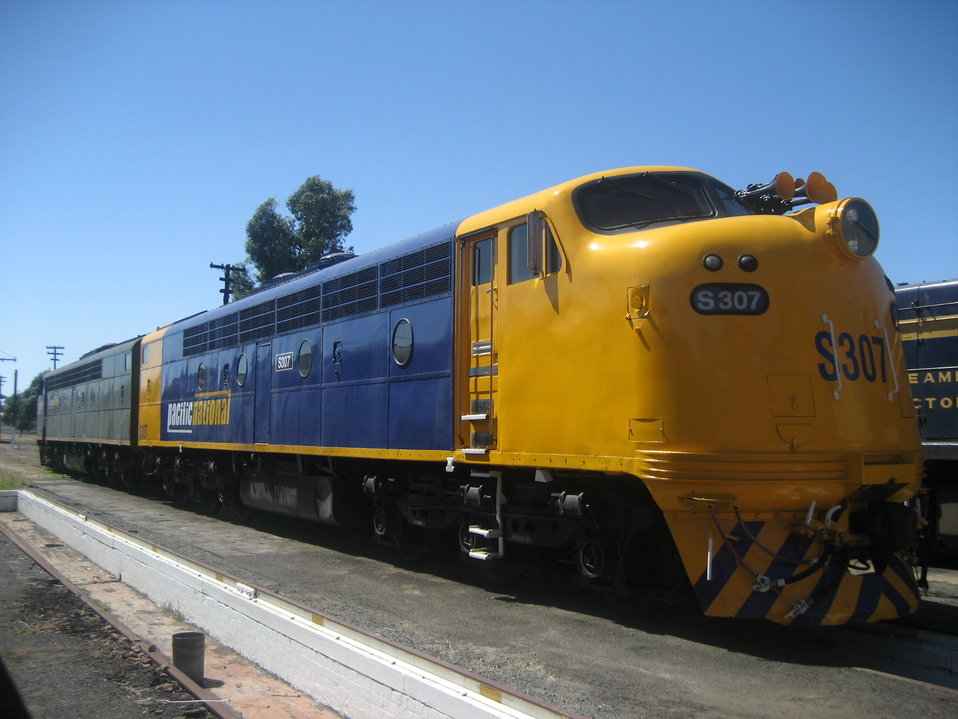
Pacific National S class locomotive 'S307' at Newport Workshops.